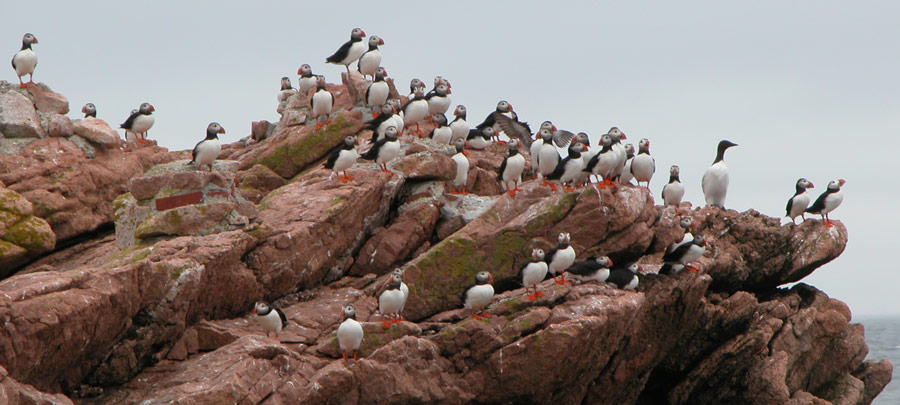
Razorbills and Atlantic puffin

Razorbills and Atlantic puffins at Maine Coastal Island National Wildlife Refuge